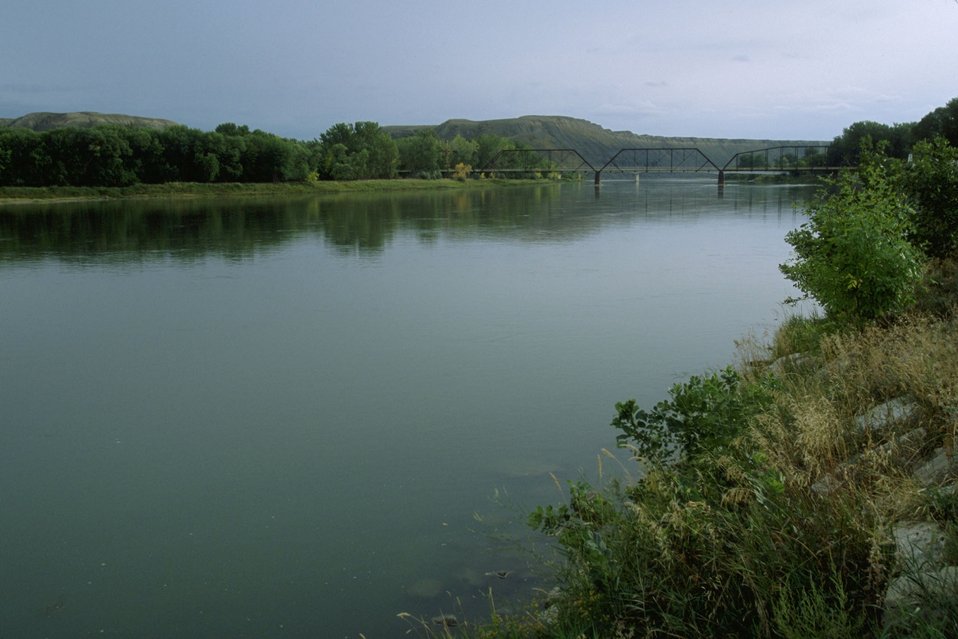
Missouri River and historic bridge at Fort Benton